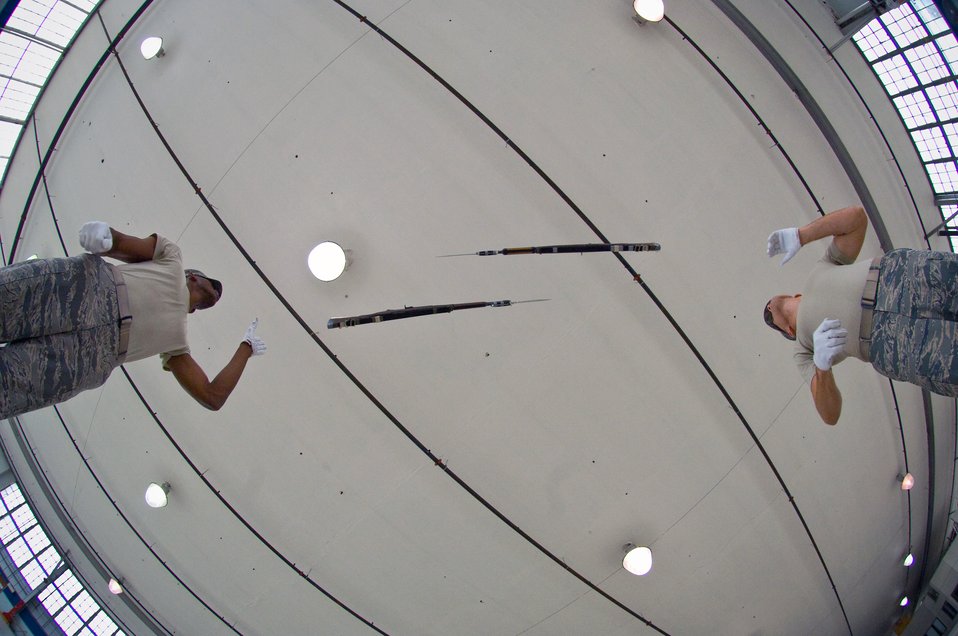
Honor Guard holds annual training camp at Maxwell AFB

Staff Sgt. Jason Martin (right) and Senior Airman Jermaine James perform an overhead weapon exchange while training for their 2008 performance sequence Jan. 24 at Maxwell Air Force Base, Ala. Sergeant Martin is the drill team head trainer and Airman James is a drill team member.